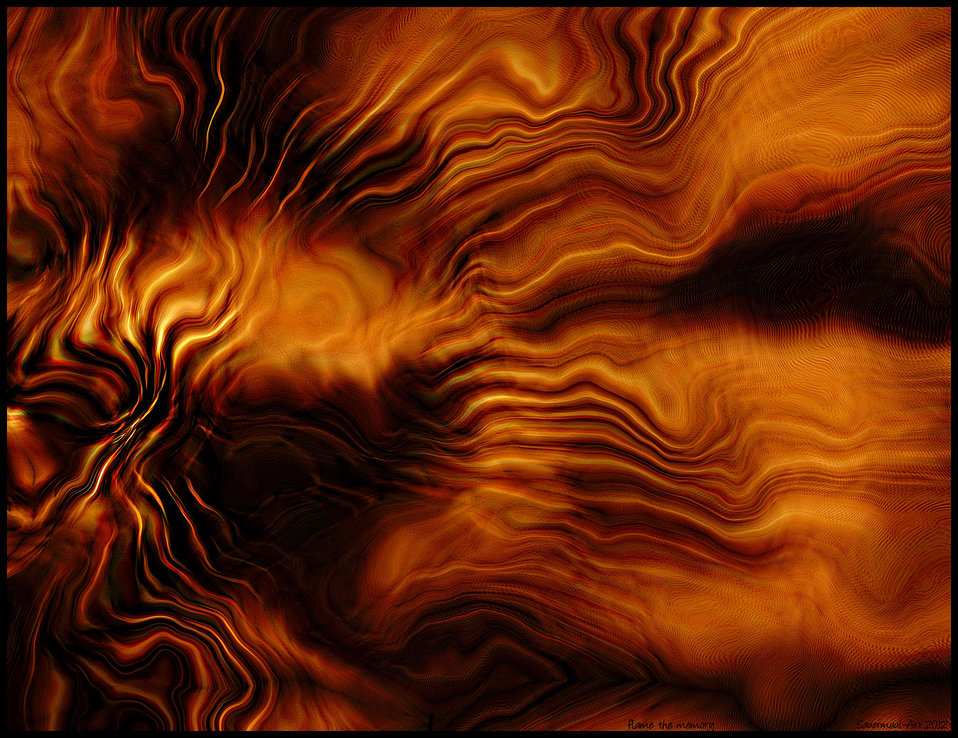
Flame of remembrance

The purification of the soul.